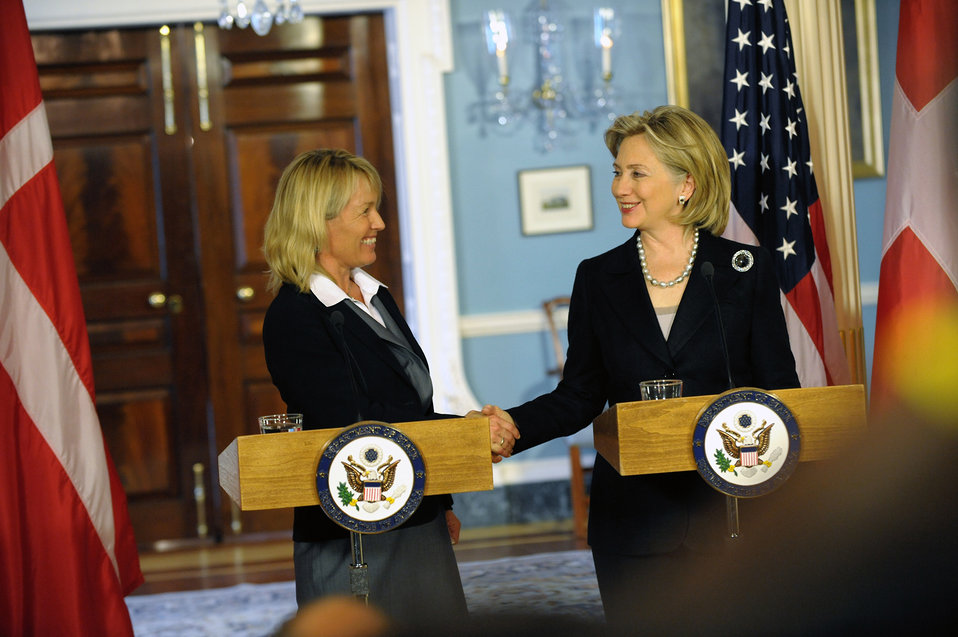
Secretary Clinton Holds Bilateral With Danish Foreign Minister Espersen

U.S. Secretary of State Hillary Rodham Clinton holds a bilateral meeting with Danish Foreign Minister Lene Espersen at the U.S. Department of State in Washington, D.C., on June 18, 2010.